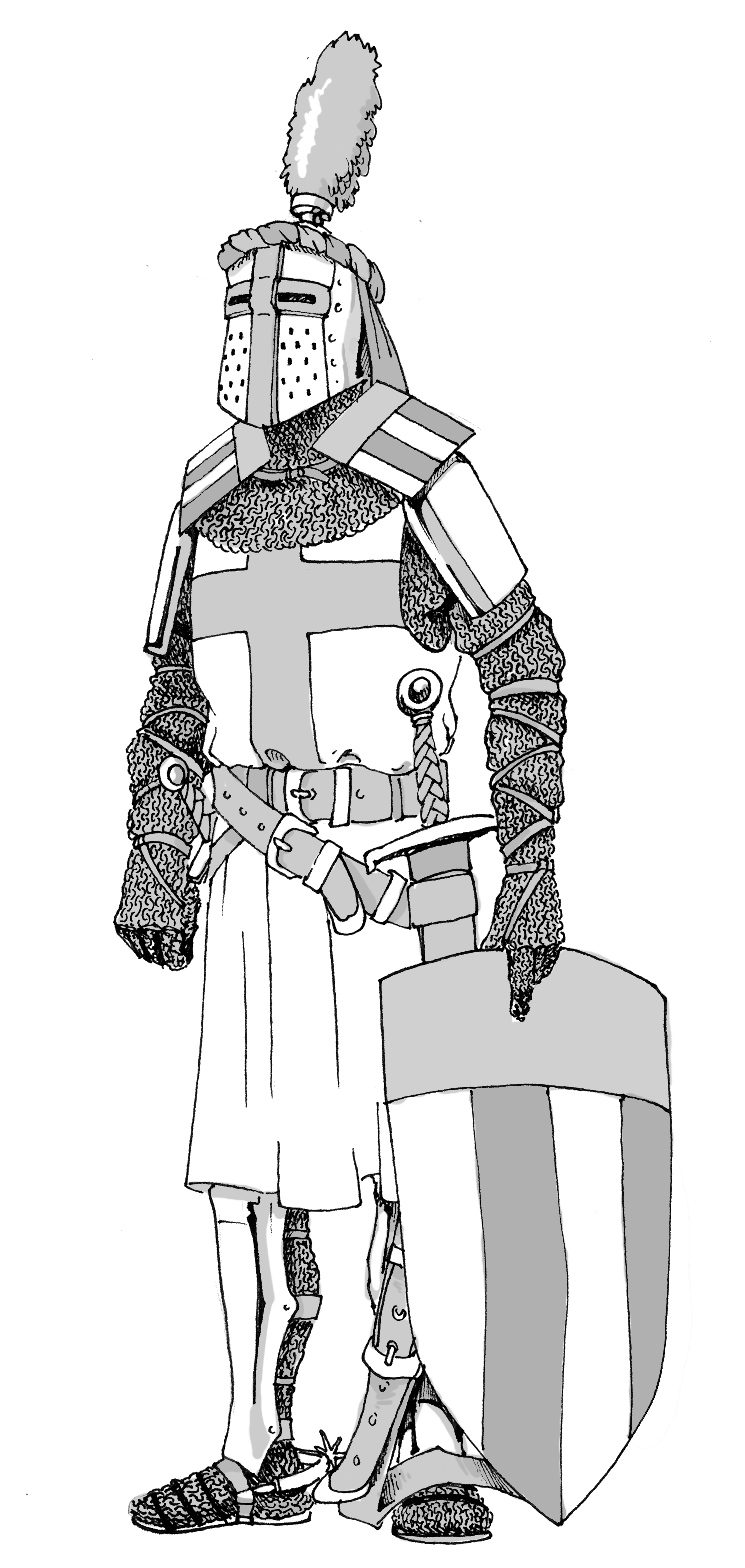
the image shows a knight from the 13th century